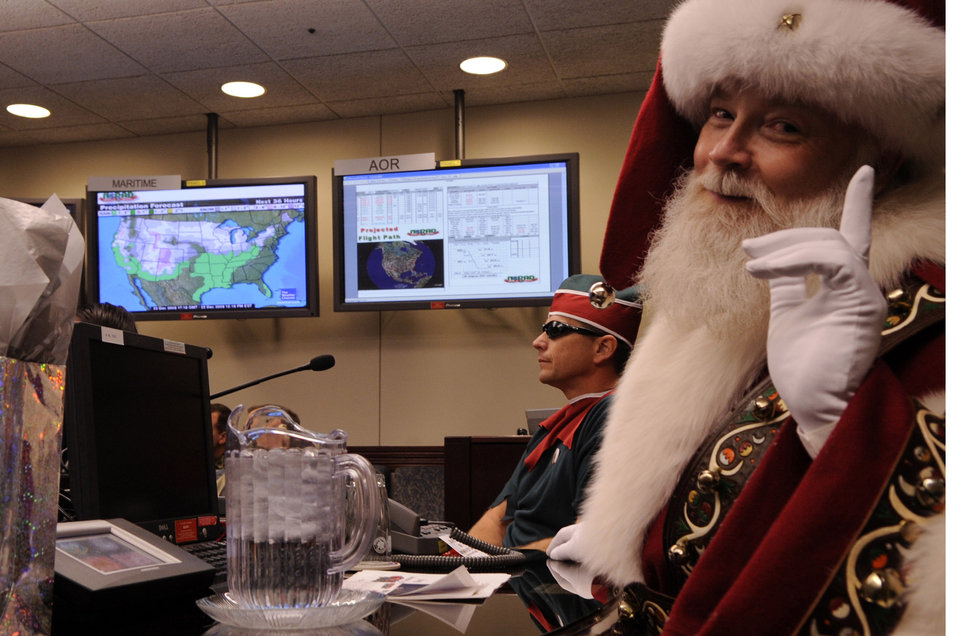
Santa's flight briefing

Santa Claus and Elf Dee made a surprise visit to the NORAD TRACKS SANTA command post Dec. 23 at Peterson Air Force Base, Colo. Santa received Federal Aviation Administration, weather and air mission briefings during the visit.